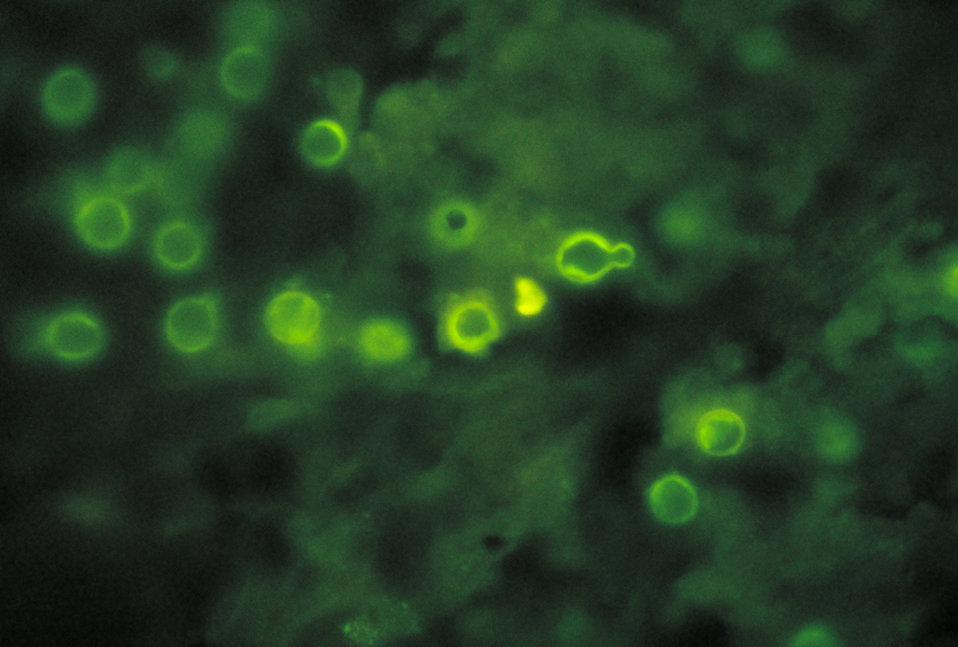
Direct FA stain revealing the histopathology of lung tissue blastomycosis due to the organism Blastomyces dermatitidis.